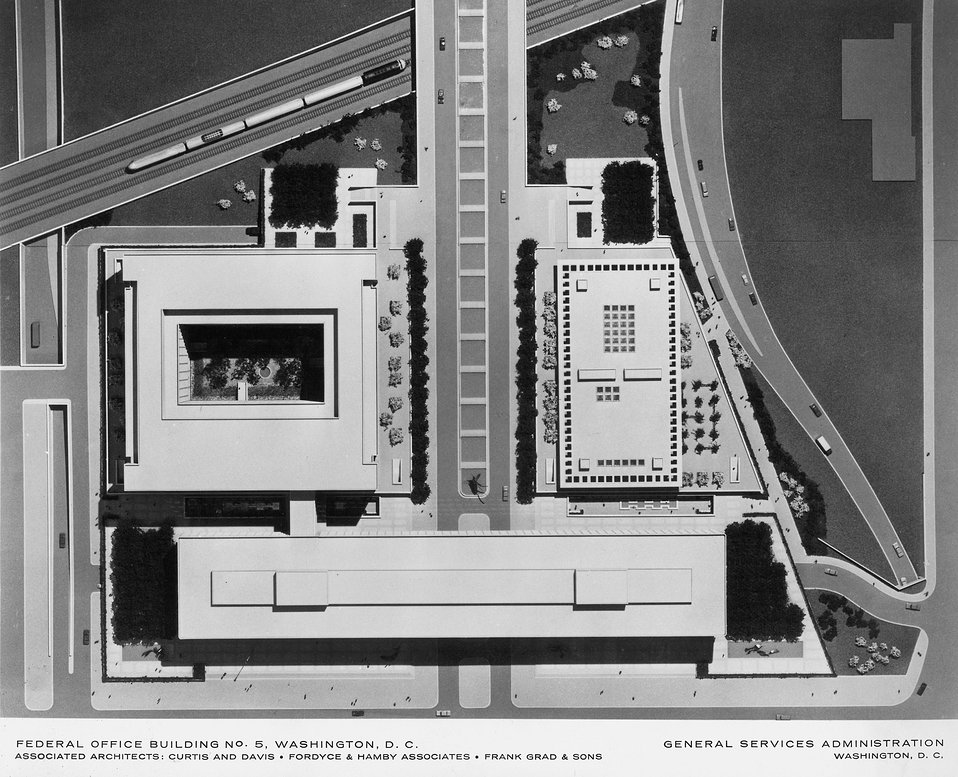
Federal Office building No. 5 Washington DC